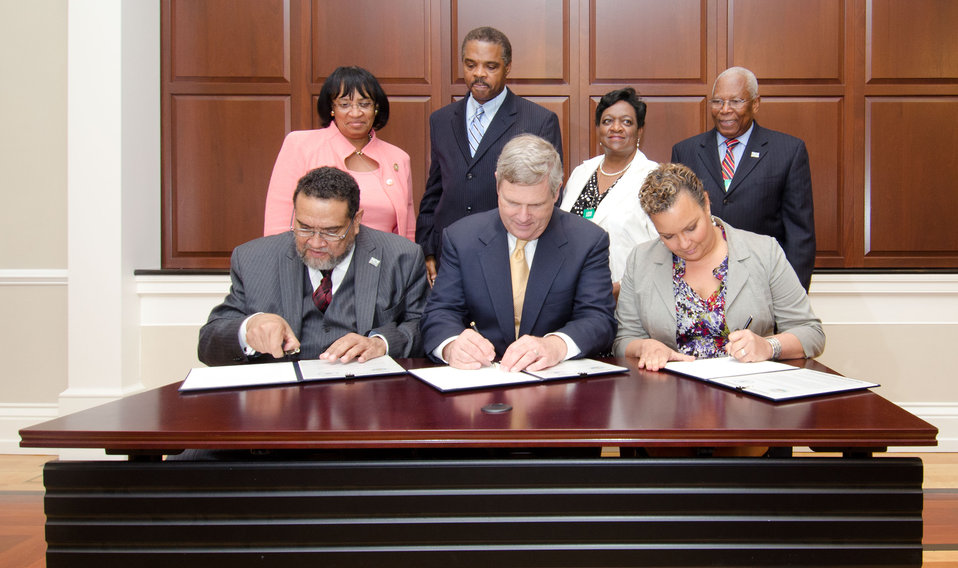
Left to right Tuskegee University President and Council of 1890 Universities Chair Gilbert Rochon, Agriculture Secretary Tom Vilsack and Administrator of the Environmental Protection Agency (EPA) Lisa Jackson sign the 2012 Memorandum of Understanding among the department, agency and council on Friday, June 29, 2012, in Washington, DC. It has been150 years since the first Morrill Act of 1862, which was signed by President Abraham Lincoln. The action established land-grant universities in every state and territory. The second Morrill Act of 1890 provided funding to designate separate institutions of higher learning for blacks in those states that did not open the doors of their universities to black students.